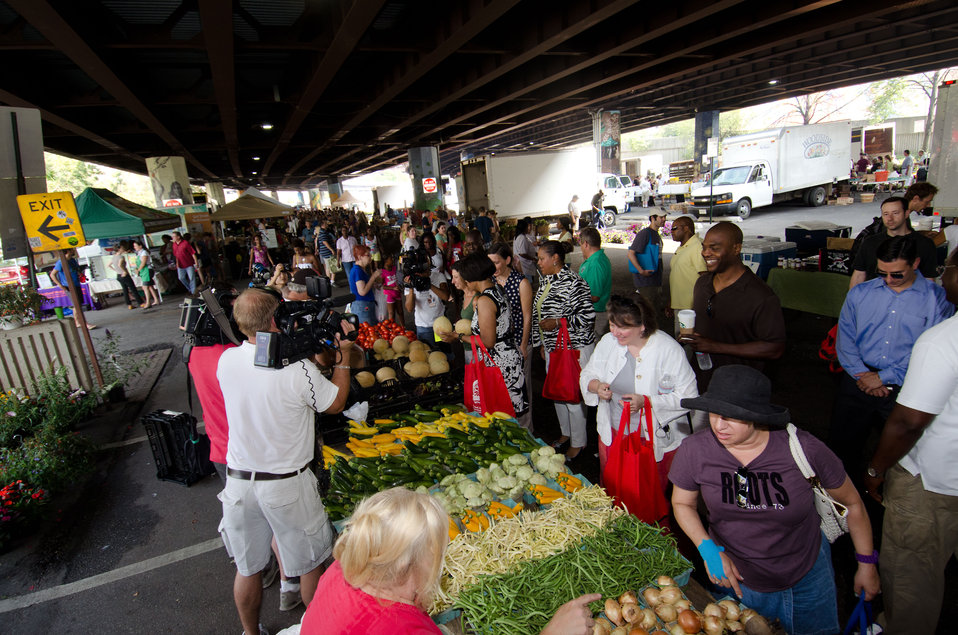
U.S. Department of Agriculture Deputy Secretary Kathleen Merrigan (white jacket), buys green beans and cucumbers from a vendor that also accepts Baltimore Farmers' Market and Bazaar tokens, in Baltimore, MD, on Sunday, July 8, 2012. The wireless portable terminals accept SNAP (Supplemental Nutrition Assistance Program) benefits, through the use of (Electronic Balance Transfer) EBT cards, Baltimore Bucks, and debit card through a wireless connection. 'SNAP participation at farmers' markets helps provide fresh fruit and vegetables to families and expands the customer base for local farmers in the Delmarva area, a win-win for agriculture and local communities,' said Agriculture Deputy Secretary Kathleen Merrigan. 'And when we couple SNAP access at farmers' markets with strategies like education, cooking demonstrations, and community support in the Baltimore area, consumption of healthy foods has potential to grow even more.'